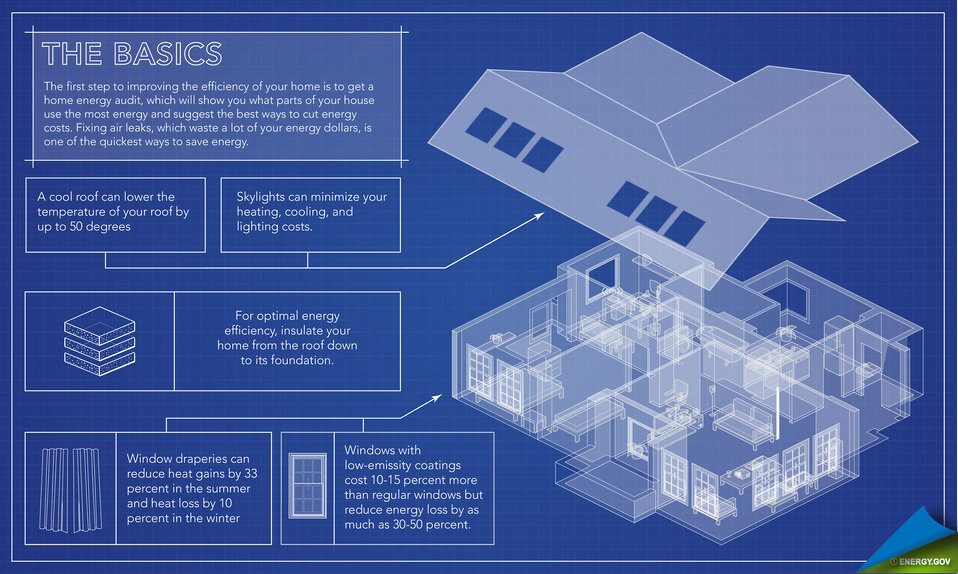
The Energy Efficient Home: The Basics